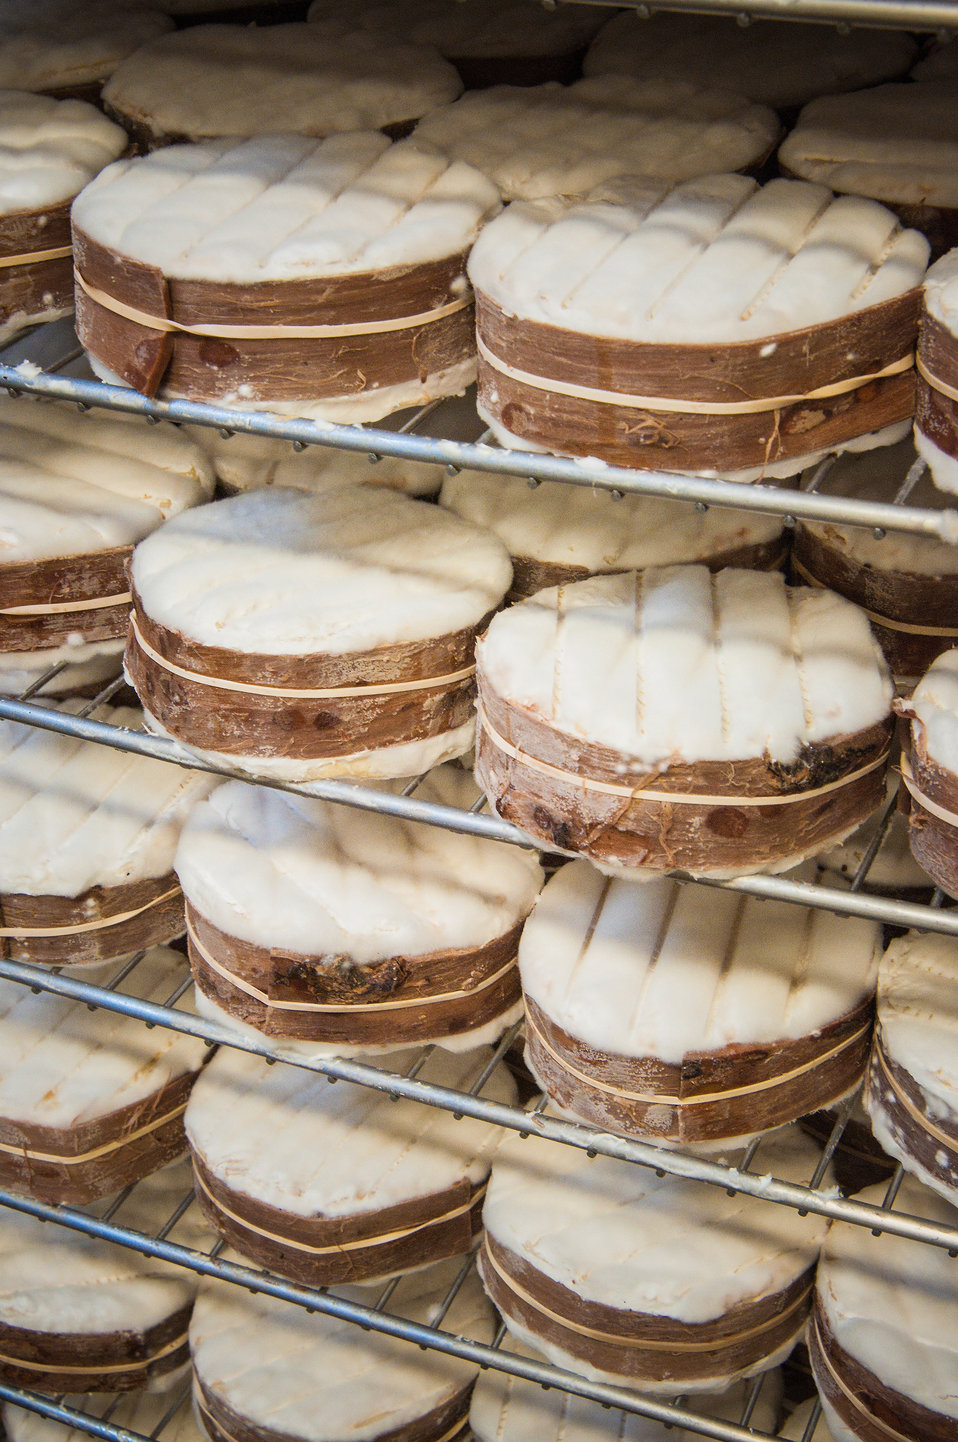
Harbison cheese is a bark-wrapped, bloomy-rind cheese with sweet-cream flavors produced by The Cellars at Jasper Hill in Greensboro, VT. Each wheel is cinched with a cutting of spruce interior bark layer, harvested from the farm’s woodlot. This technique adds woodsy nuance to the ripening cheese, while providing structure as it dramatically softens over time. The resulting cheese is thick and spoonable complimented by the texture and flavor of its edible rind.The Cellars at Jasper Hill, an innovative 22,000 square foot underground facility consisting of seven ageing caves received a U. S. Department of Agriculture (USDA) Rural Development (RD) Business and Industry Guaranteed (BIG) Loan. This loan was used to construct state-of-the-art artesian cheese aging cave facility to support expanded on-farm value-added cheese production as well as contract aging for other local cheese makers so they may access the growing market for artisan cheese nationwide on Sep. 19, 2013.